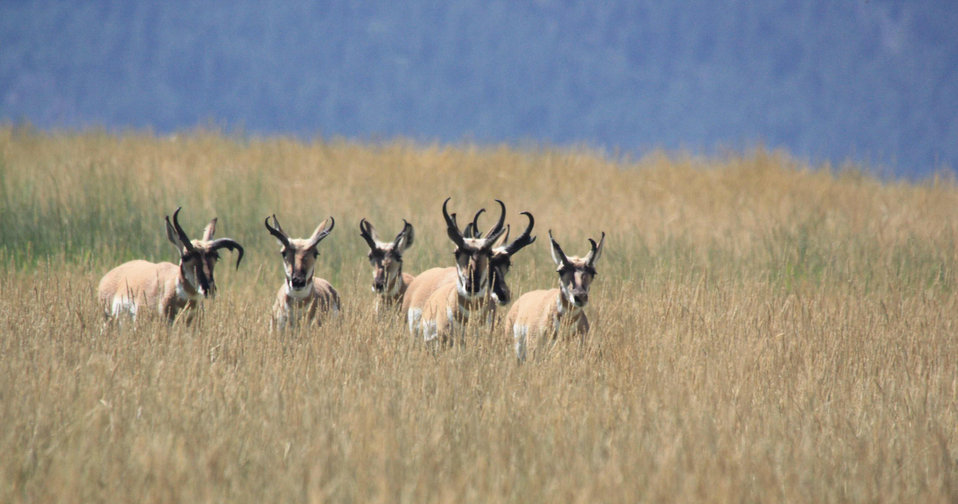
Male Bonding

A group of male pronghorns pass through a sea of grass on the National Elk Refuge. Note the unique horn on the buck on the left.

Credit: USFWS / Ann Hough, National Elk Refuge volunteer